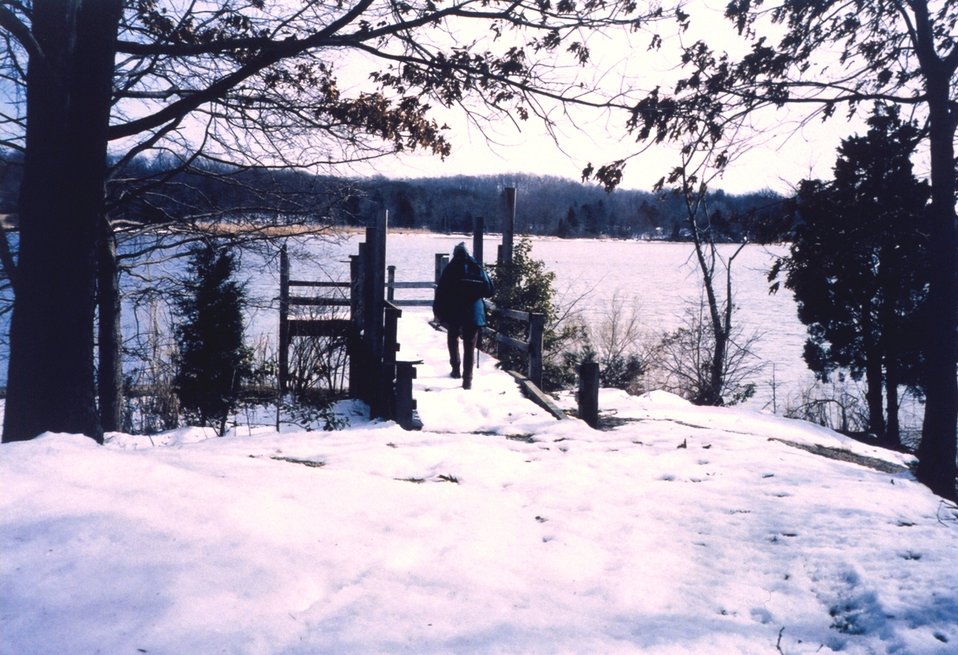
Winter along the Patuxent River.